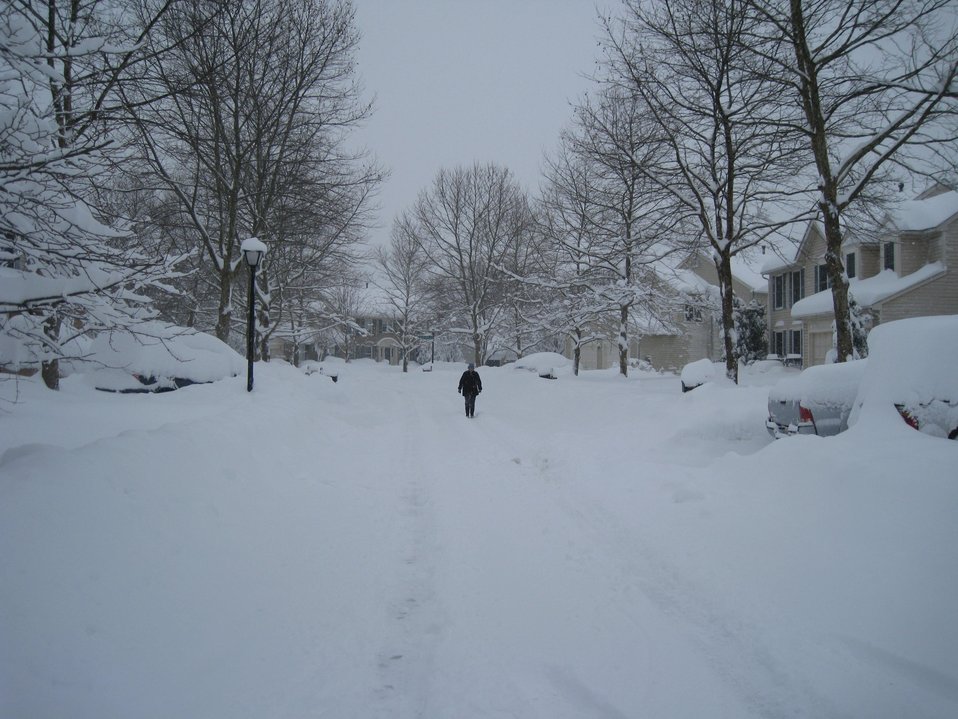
Walking in a winter wonderland.